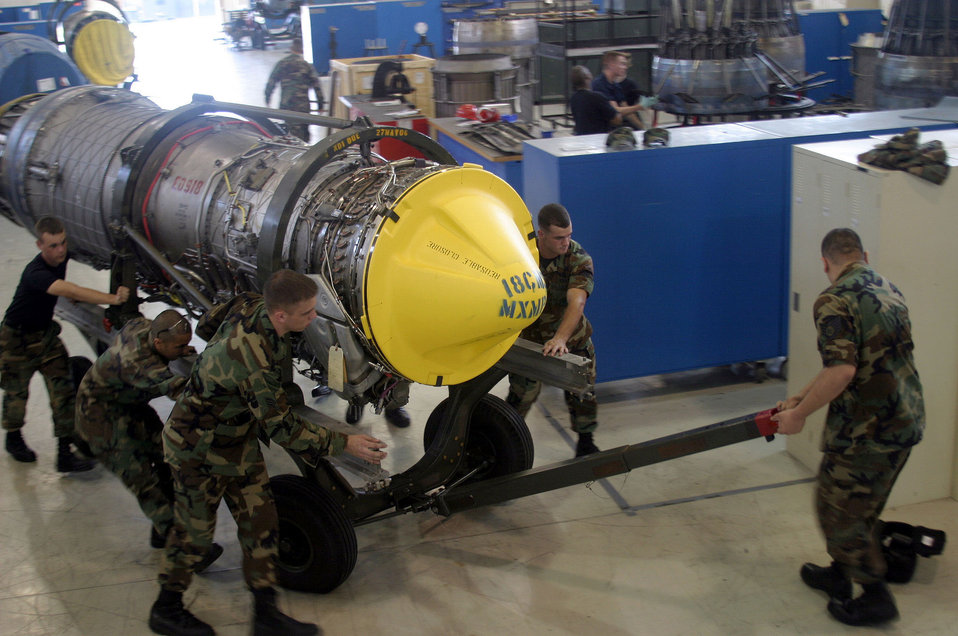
Last call for overhaul

KADENA AIR BASE, Japan -- Jet engine mechanics with the 18th Component Maintenance Squadron move the last upgraded F-15 Eagle engine in a maintenance hangar here. For the last six years more than 100 mechanics have been upgrading more than 100 F-15 engines from a